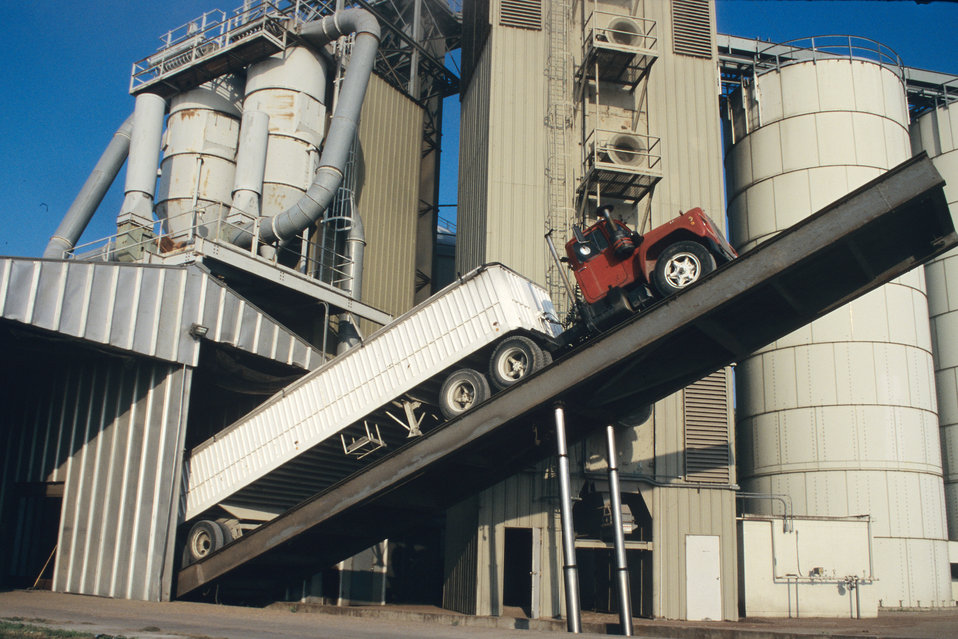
A grain truck scale with an elevated dump platform is used to empty grain trailers that are not equipped with hopper bottom unloading capabilities at Riceland Foods Incorporated in Jonesboro, AR on Sept. 1, 1996. The U.S. Department of Agriculture (USDA) Grain Inspection, Packers and Stockyards Administration (GIPSA) offers inspection services for rice upon request on a fee basis for both domestic and export shipments. Rice inspection services are divided into two basic types: inspection for grade or factor analysis without grade. Inspection for grade involves analyzing the sample according to the quality factors listed in the Official U.S. Standards for Rice and certifying the applicable numeric grade designation, the quality factors responsible for the grade assignment, and any other quality factors the customer requests. Factor analysis involves the analysis of quality factors requested by the applicant for service without the certification of an applicable numeric grade designation. Factors requested by applicants might include free fatty acid, total oil and free fatty acid, stain as a count, broken in brown rice, false smut, and aflatoxin. Official inspections result in the issuance of an official certificate, which reports the grade of the rice. U.S. and international buyers rely on official USDA inspection certificates to provide accurate, official descriptions of the grade, class, and condition of the inspected rice. Official certificates are receivable by all offices and all courts of the United States as prima facie evidence of the truth of the statements stated thereon.